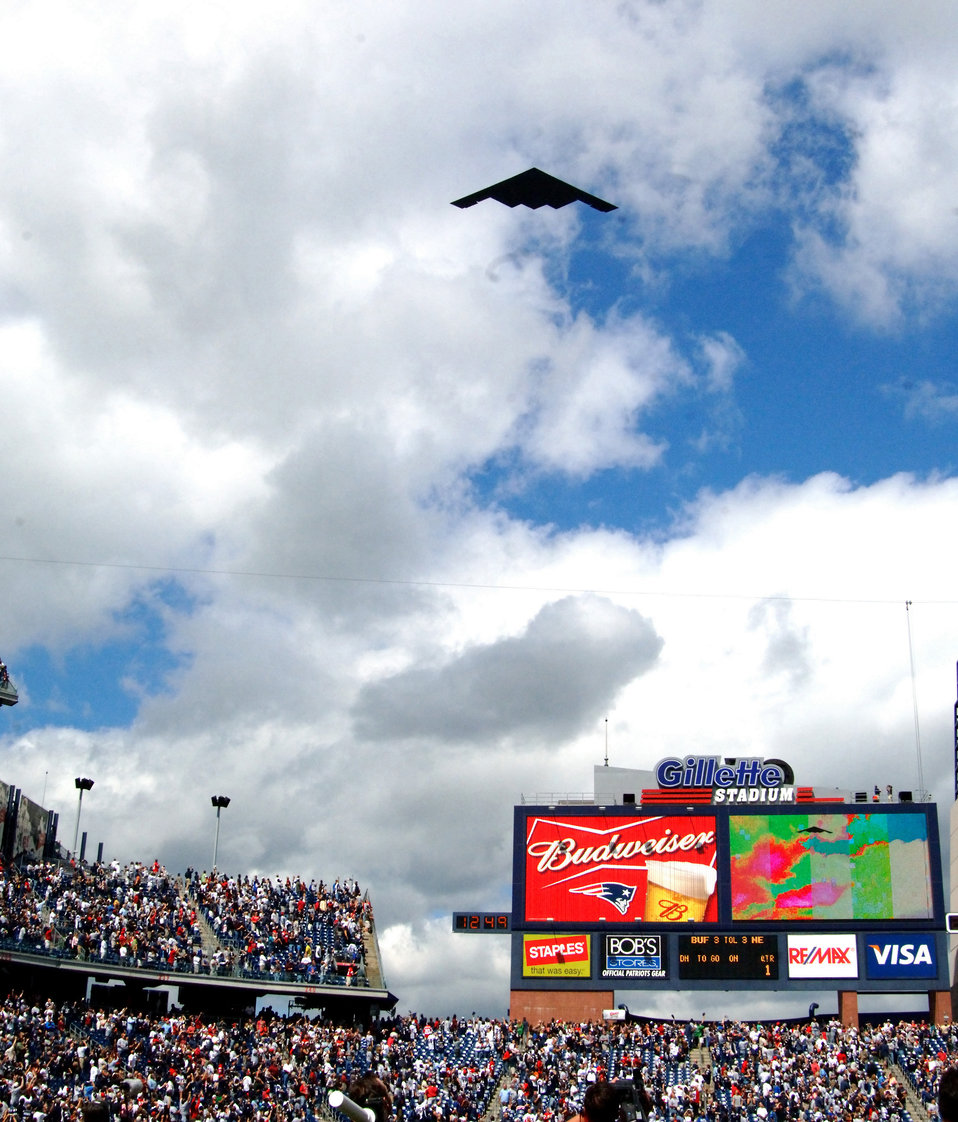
B-2 Impresses Crowd

A B-2 Stealth Bomber from Whiteman Air Force Base, Mo., flies over Gillette Stadium moments before the New England Patriots and Buffalo Bills game on 10 Sep. During halftime, hundreds of recruits were enlisted in the Army National Guard by Brigadier General Oliver Mason. New England won the game 19-17.